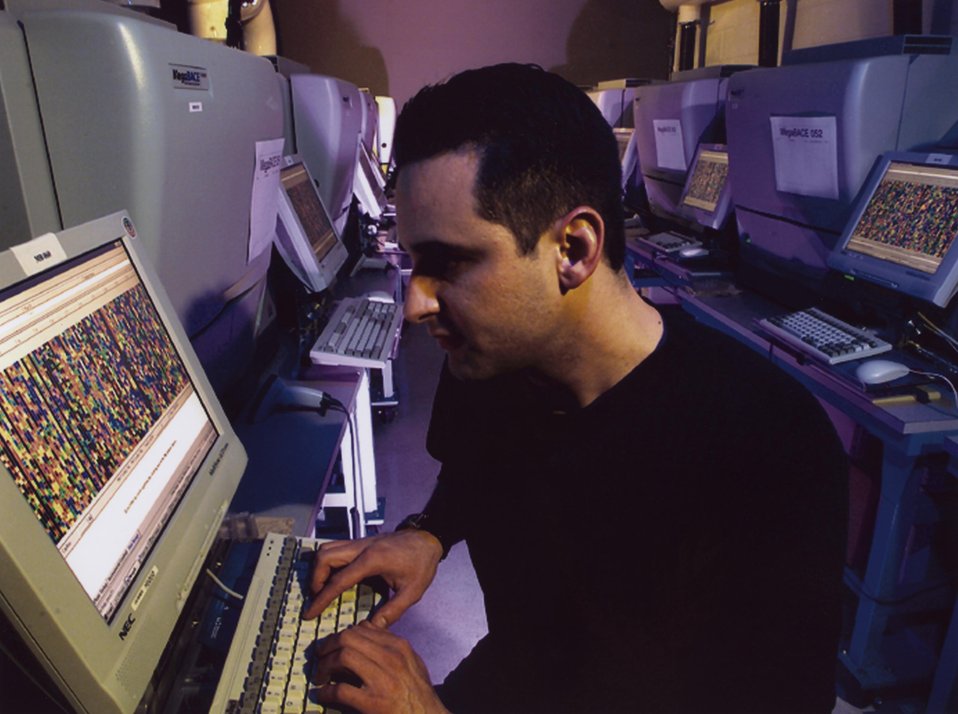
JGI TECHNICIAN REVIEWING SEQUENCE DATA PRODUCED BY ONE OF JGI'S 84 DNA CAPILLARY SEQUENCES.
THE JOINT GENOME INSTITUTE, LOCATED NEAR LLNL, A COLLABORATION OF LLNL, LBNL AND LANL, IS AN OUTGROWTH OF THE EARLIER WORK DONE IN HUMAN GENETICS BY DOE'S NATIONAL LABS AND THEIR INVOLVEMENT IN THE WORLDWIDE HUMAN GENOME PROJECT. THE AIM IS TO DECODE THE ENTIRE SEQUENCE OF A REFERENCE 3 BILLION DNA BASES ( THE AMOUNT THAT IS A SINGLE CELL'S NUCLEUS), CALLED THE GENOME, AND TO APPLY THIS KNOWLEDGE TO IMPROVE MEDICINE, HEALTH CARE, AND OTHER AREAS OF BIOLOGICAL SCIENCE.